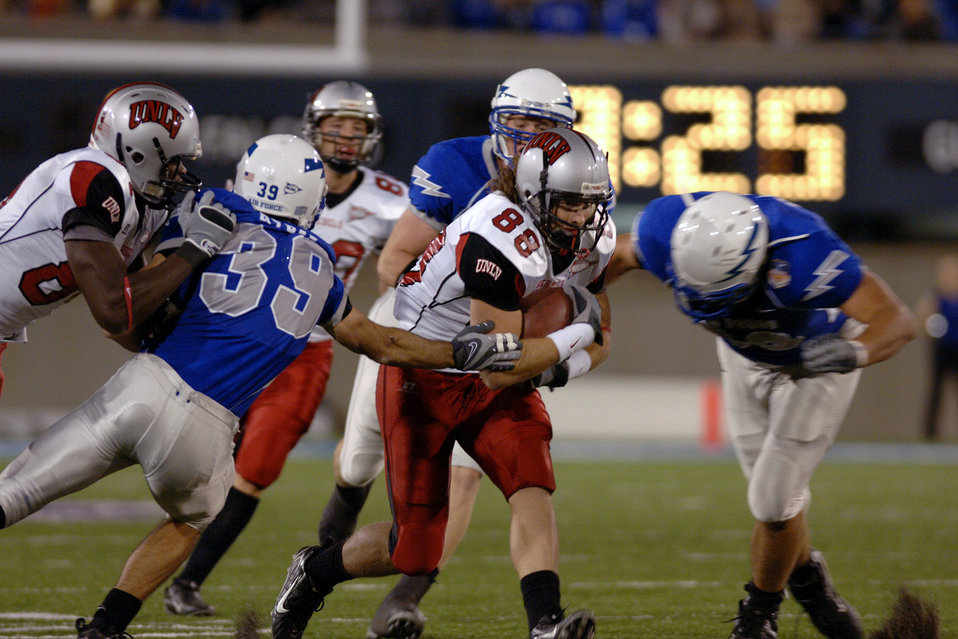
Falcons back on winning track, 31-14

Air Force cornerback Garrett Rybak, 39, and two teammates close in on UNLV wide receiver Ryan Wolfe during the Falcons 31-14 win over UNLV Oct. 6 at Falcon Stadium. Rybak posted four tackles in the game.